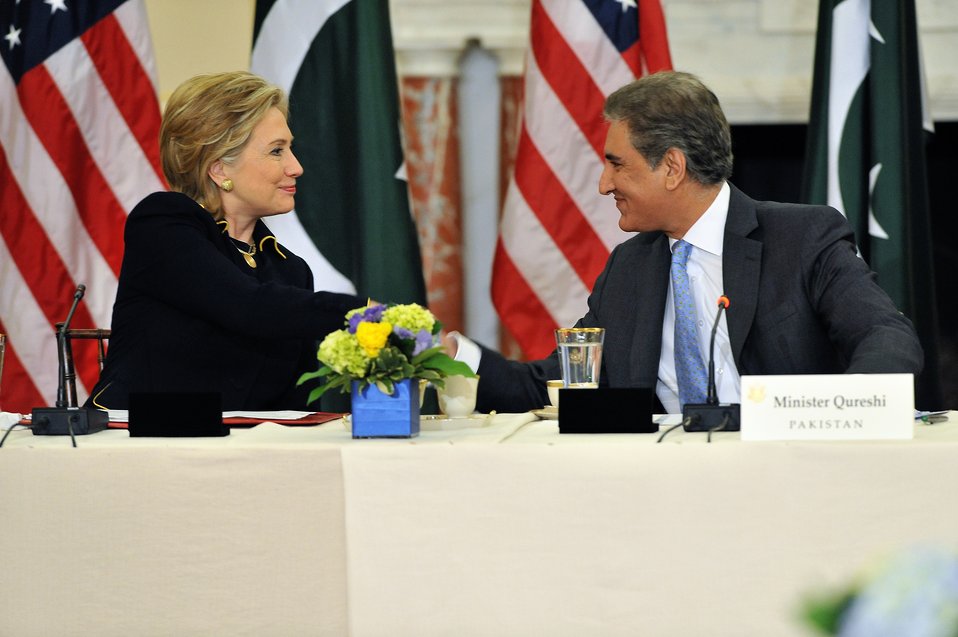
Secretary Clinton With Pakistani Foreign Minister Makhdoom Shah Mahmood Qureshi

U.S. Secretary of State Hillary Rodham Clinton speaks with Pakistani Foreign Minister Makhdoom Shah Mahmood Qureshi during the U.S. Pakistan Strategic Dialogue meeting at the U.S. Department of State in Washington, D.C., March 24, 2010.